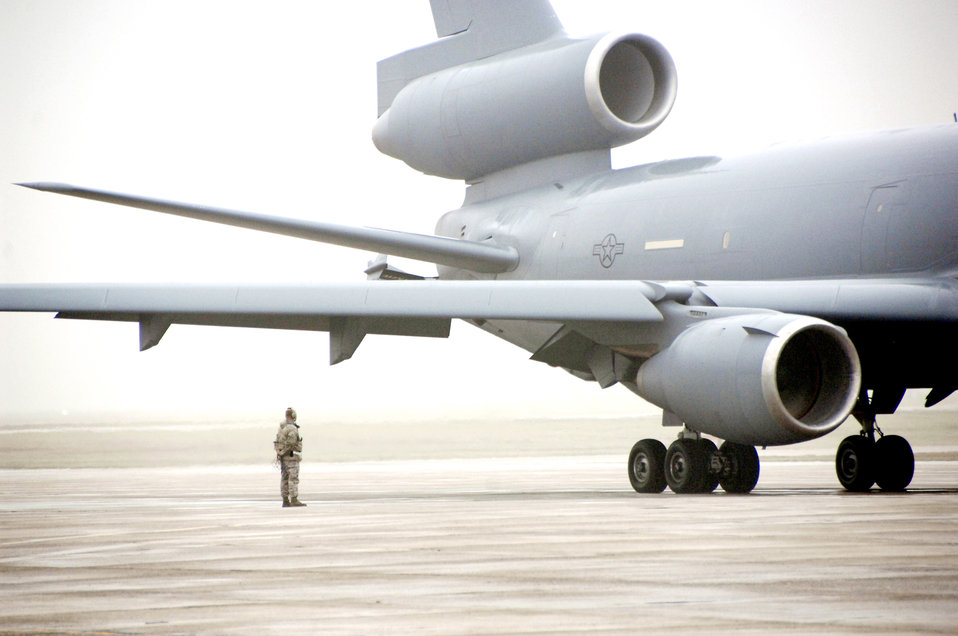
Travis officials conduct mass launch

A KC-10 Extender prepares to take off Dec. 21 during the first-ever mass launch of nine aircraft at Travis Air Force Base, Calif. The total force launch effort was an opportunity for operations, maintenance and support personnel to train together on a larger scale than normal.